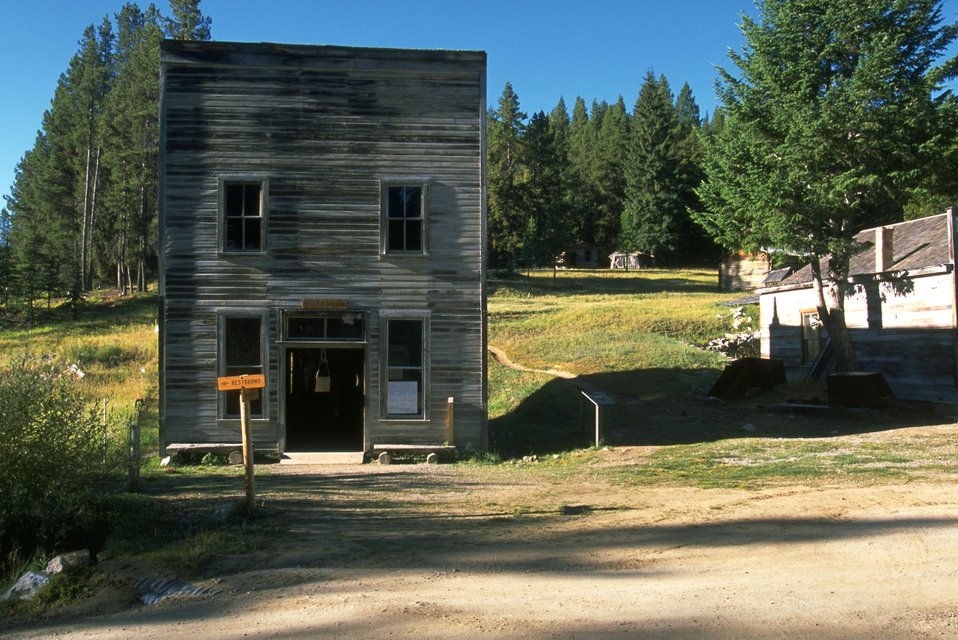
Garnet Ghost Town--Kelly's Saloon